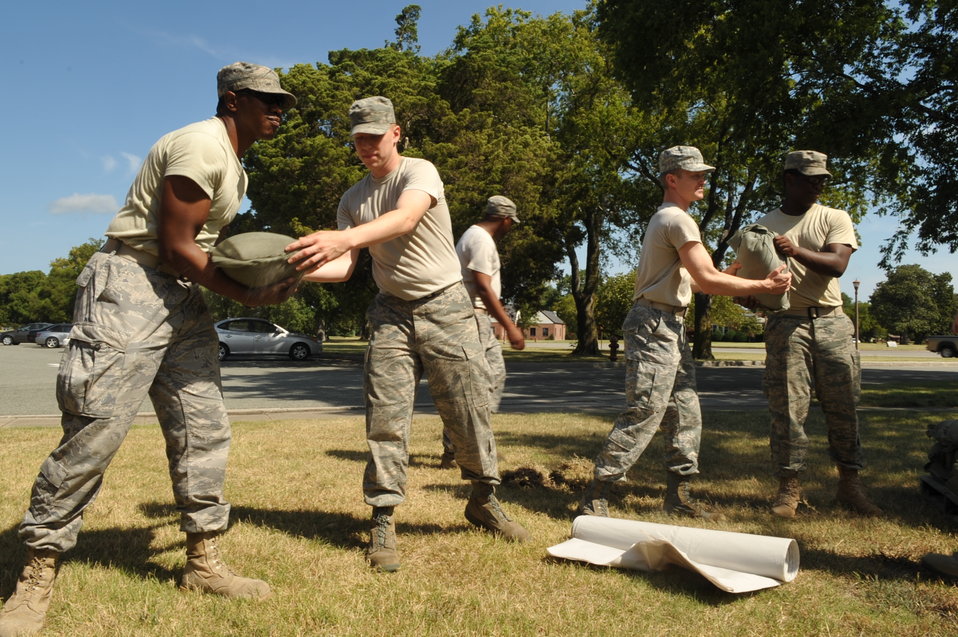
Preparing for the storm

Airmen from the 633rd Communications Squadron sandbag the doorways at the base telephone office Aug. 25, 2011, in an effort to prevent flooding at Langley Air Force Base, Va. The base is preparing for Hurricane Irene, which is expected to make landfall in the area early Sunday morning.